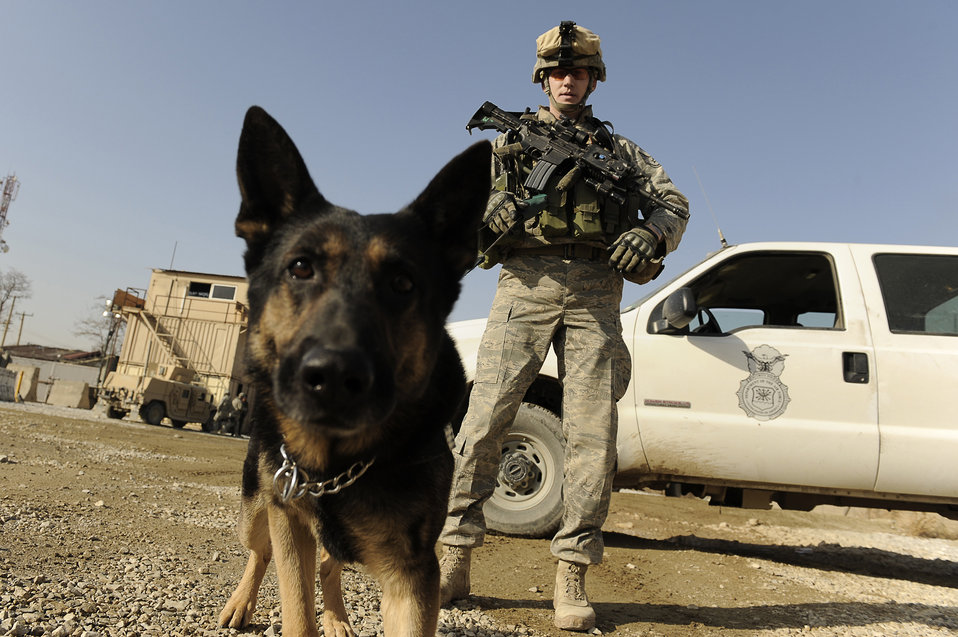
It's a dog's life at Bagram

Staff Sgt. Mitchell Stein and Artus, his military working dog, patrol an entry control point at Bagram Airfield, Afghanistan, Feb. 2, 2010. Sergeant Stein and Artus are assigned to the 455th Expeditionary Security Forces Squadron, and are deployed from Spangdahlem Air Base, Germany.